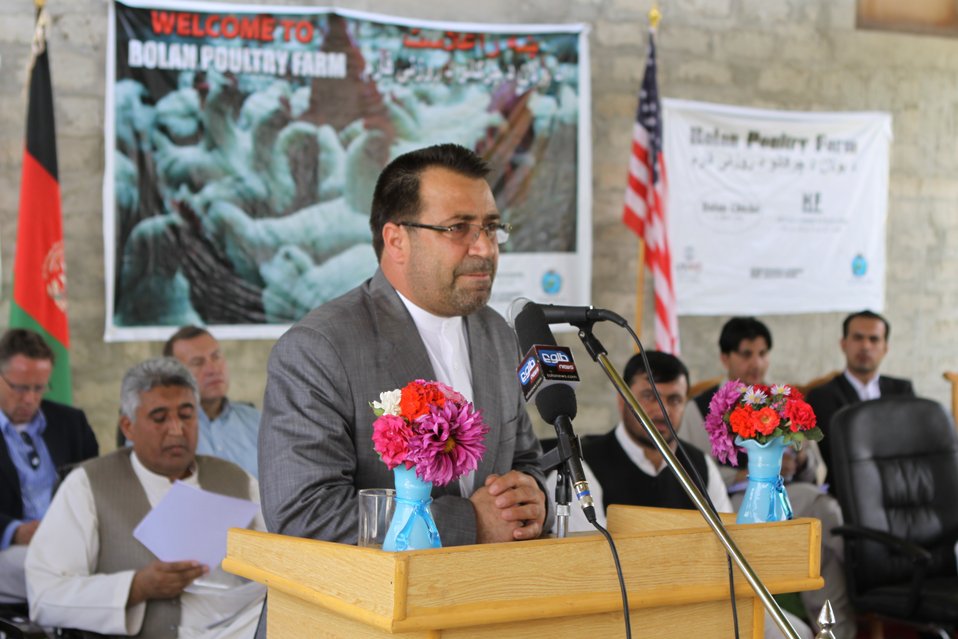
Bolan Poultry Farm